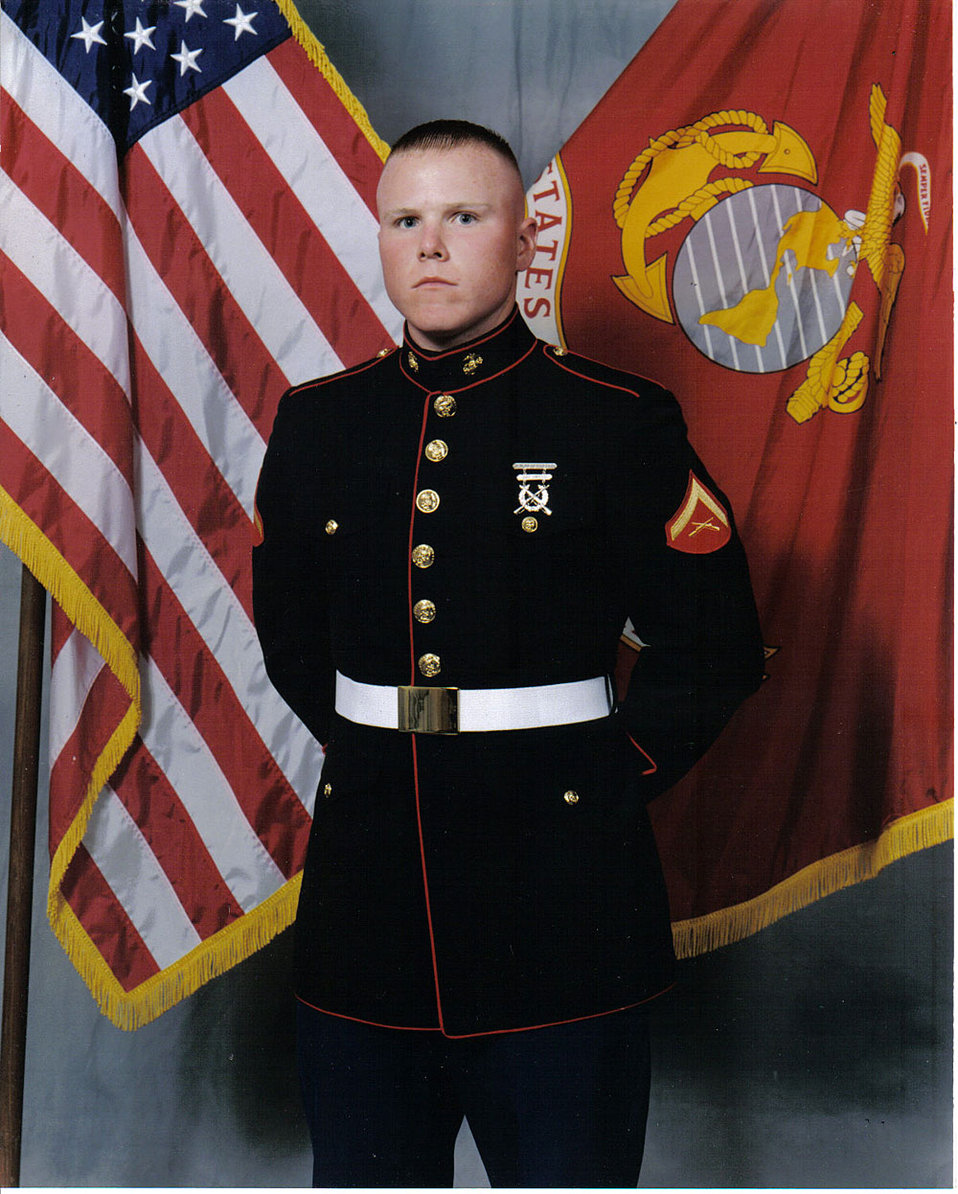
Mike Picha

Michael Picha served in the U.S. Marine Corps from 1999 to 2003. He is now a Land Surveyor for the MIdwest Region Division of Realty.